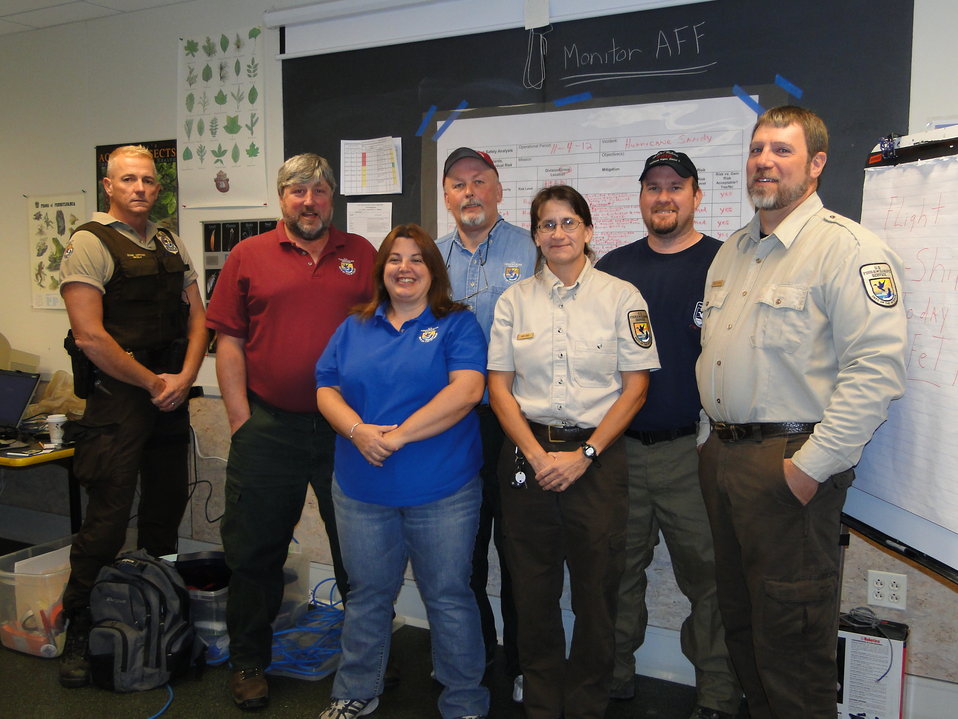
U.S. Fish and Wildlife Service All Risk Team (PA)

All Risk Team at the incident command center based at John Heinz National Wildlife Refuge at Tinicum Marsh in Philadelphia, Penn. Left to right: Commander Nicely, Mike Durfee (Plans), Pam Carota (Fiance), Gerald Vickers (Safety), Sami Gray (Operation), Michael Good (Logistics), Tim Craig (Incident Commander)